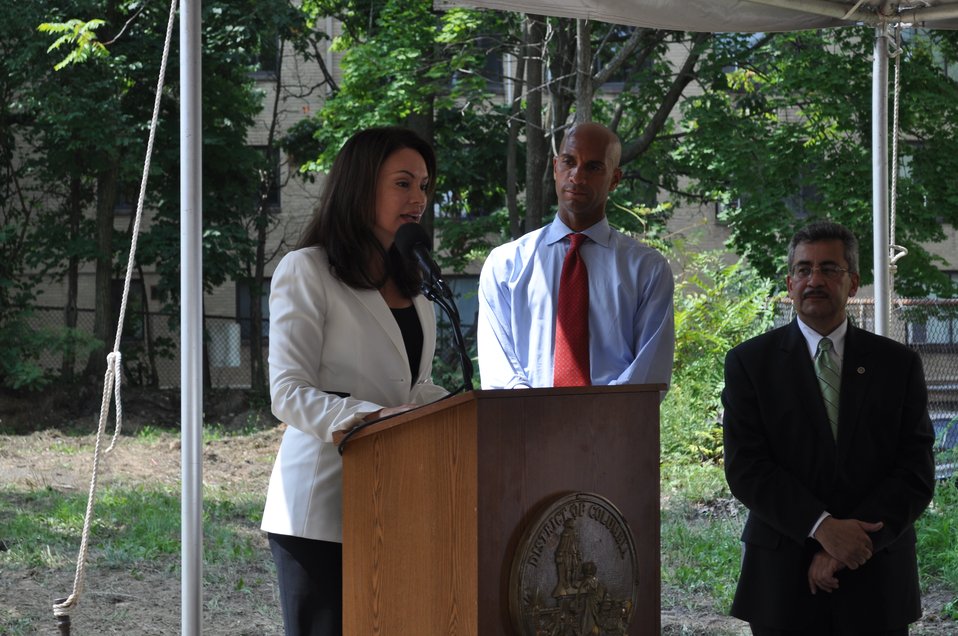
Treasurer Rios at a groundbreaking on new Vida Senior Residence funded in part by the Recovery Act, 7/27/2010

Treasurer Rosie Rios speaking at the groundbreaking event for the Vida Senior Residences while DC Mayor Fenty and Executive Director of Vida Senior Centers Irene.